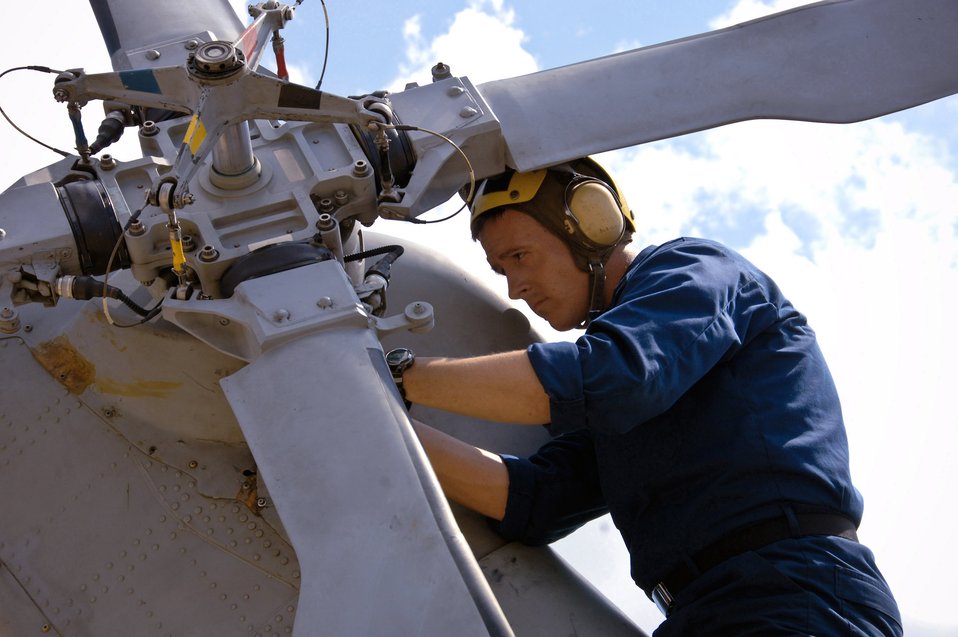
Maxwell shelters Navy Seahawks from Tropical Storm Fay

Navy Seaman Sean Sadler works on the rear rotor of a Navy SH-60B Seahawk Aug. 20 at Maxwell Air Force Base, Ala. Based at Naval Station Mayport in Jacksonville, Fla., HSL-42 aircraft and personnel flew to Maxwell AFB for shelter from Tropical Storm Fay. Seaman Sadler is a helicopter mechanic from Helicopter Anti-Submarine Squadron Light 42.